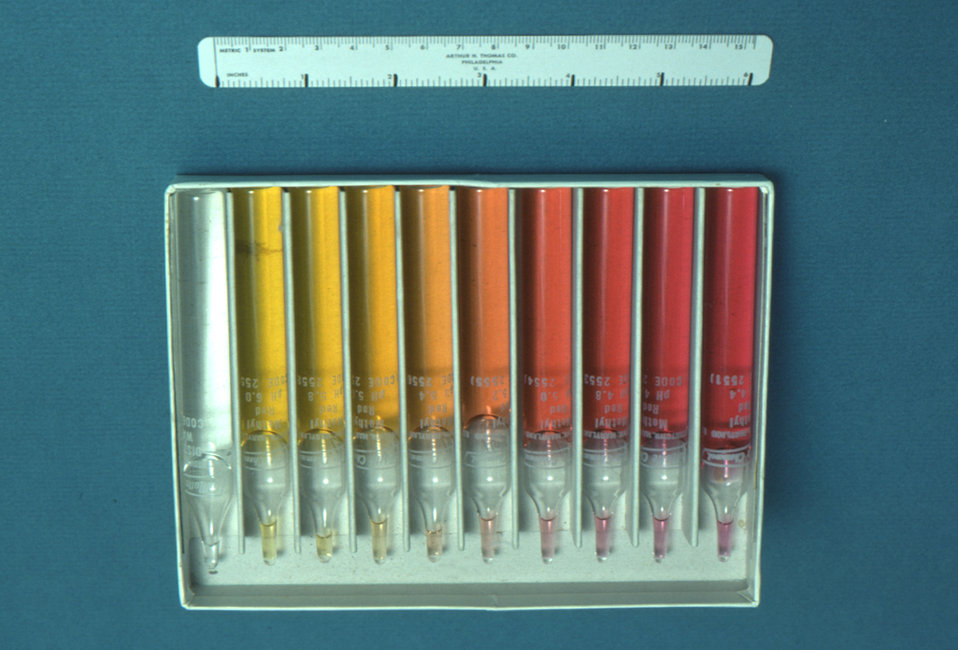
This image depicts test tubes containing the pH indicator, Phenol red.